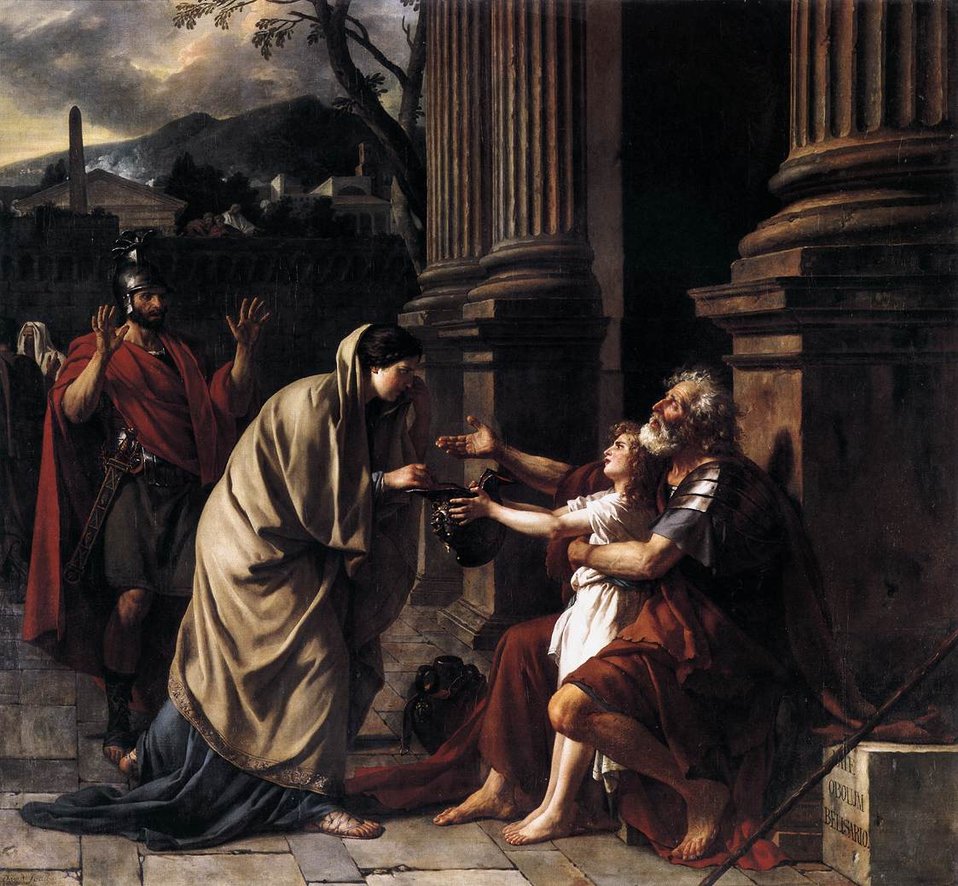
109david